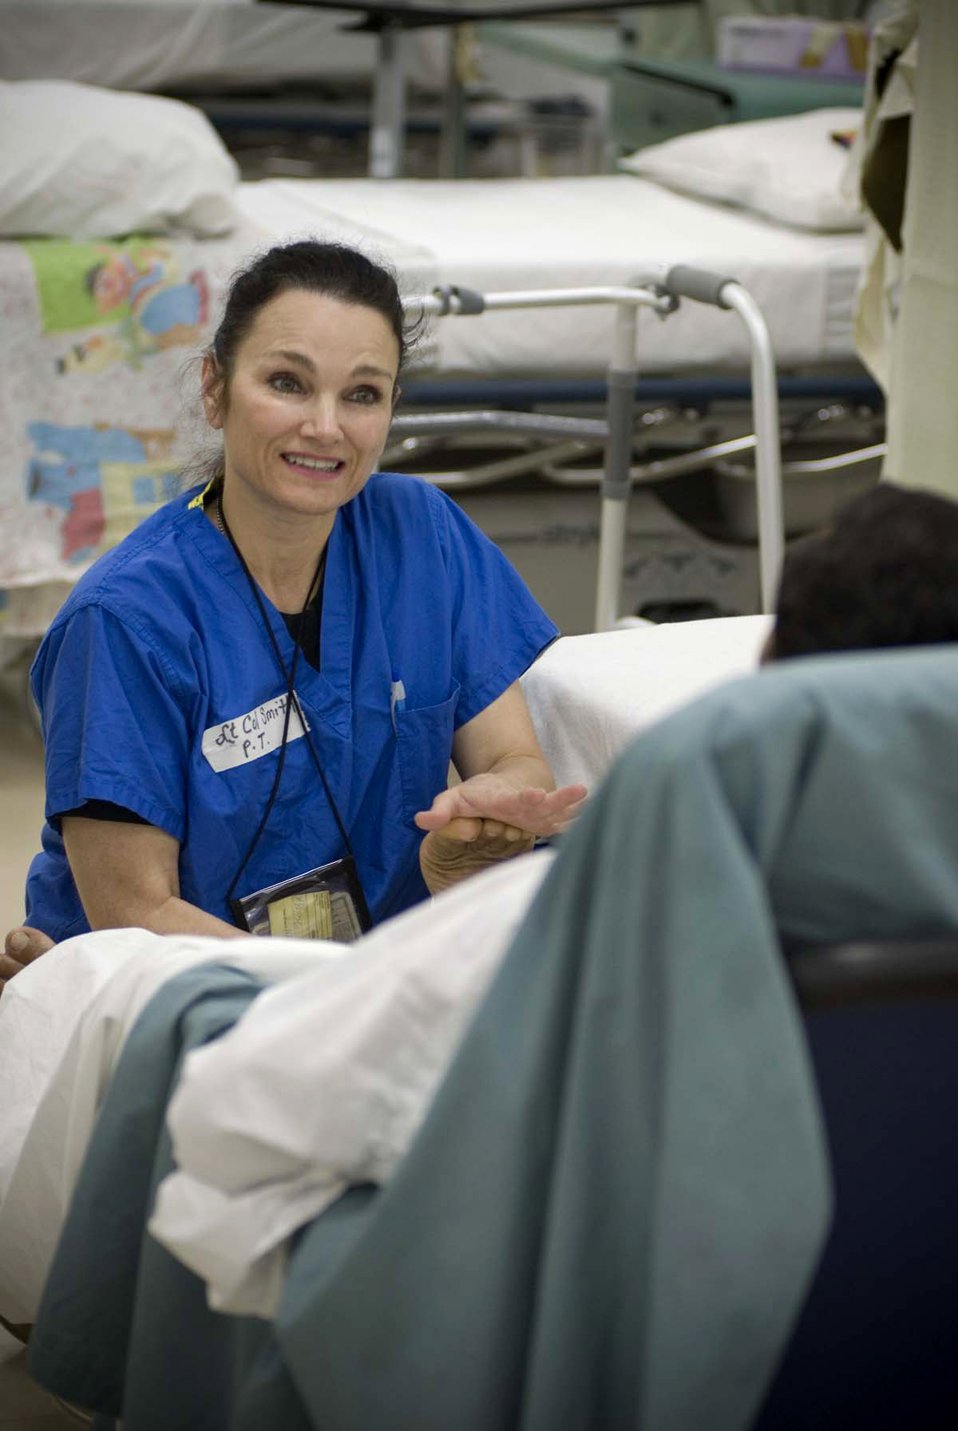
Therapy clinic provides magic touch to injured

Lt. Col. Lisa Smith does range of motion exercises with an Iraqi patient Oct. 4 in the Air Force Theater Hospital at Balad Air Base, Iraq. The exercises will help the patient regain flexibility as well as stretch out the muscles to prevent the joints from becoming stiff. Colonel Smith is a 332nd Expeditionary Medical Support Squadron physical therapist.